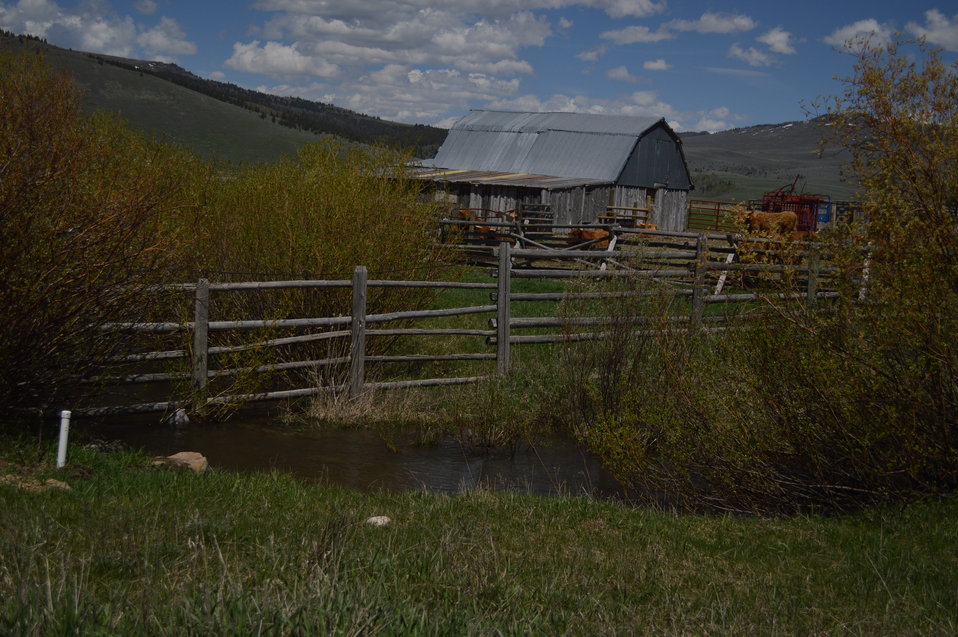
Regional Leadership Visit to Montana 2014